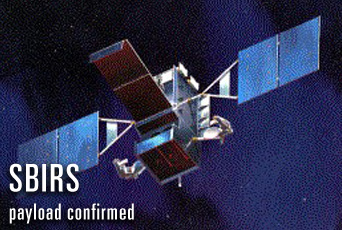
On-orbit checkout of SBIRS payload confirmed

The Space Based Infrared System will deliver a new generation of space-based satellites providing missile warning, missile defense, technical intelligence and battlespace awareness to combatant commanders.